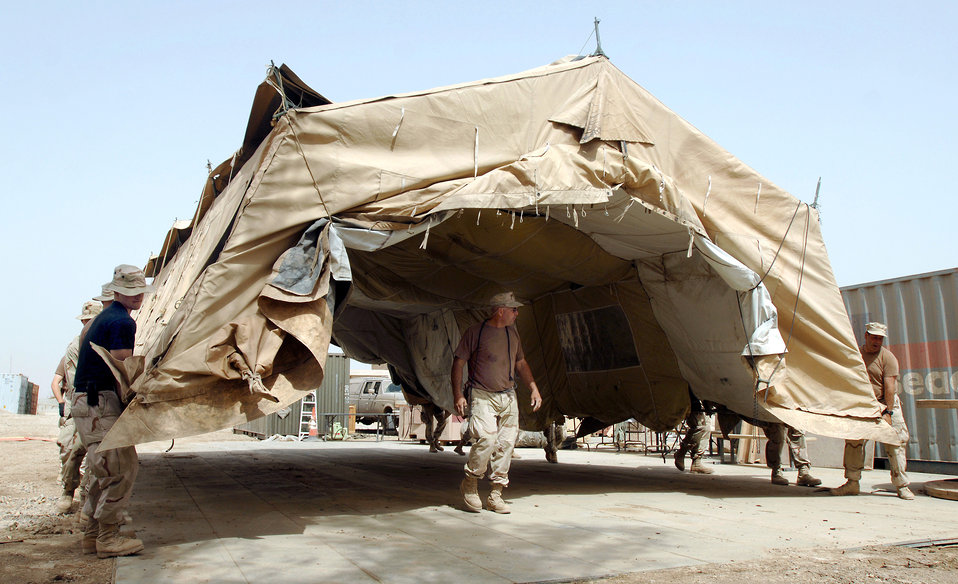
Mobile home

Members of the 407th Communications Squadron help the engineering and installation team carry a replacement tent for one that was blown away in a night sandstorm on Wednesday, April 12, 2006, at Ali Base, Iraq. Some tents were blown from their bases while buildings and vehicles were caked in mud.